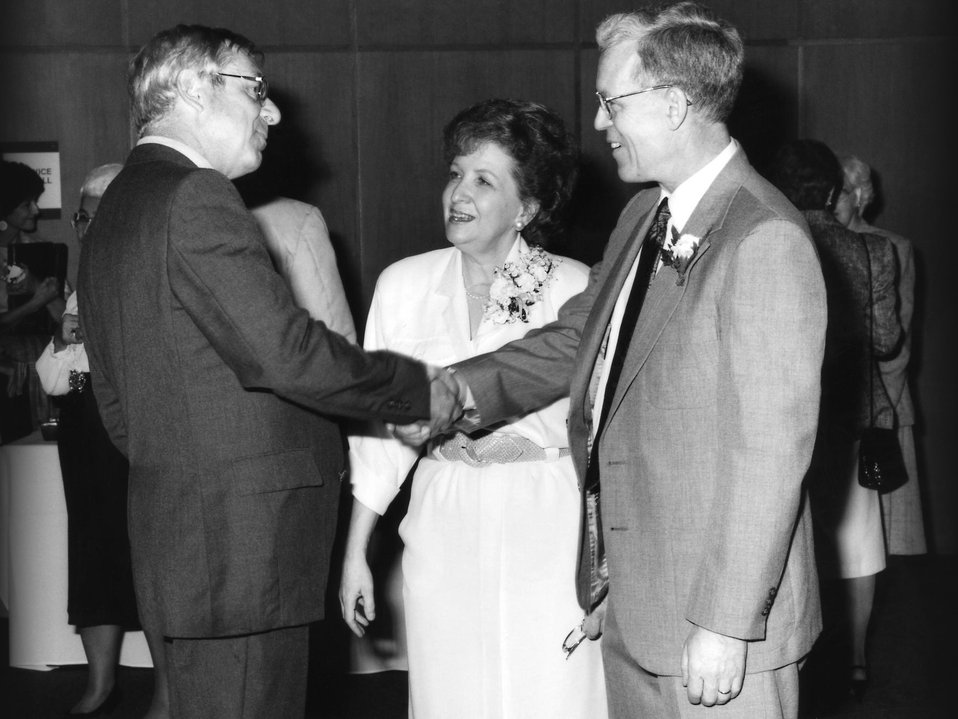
This1989 photograph showed James O. Mason, M.D., M.P.H. (right), shaking hands with Don Berreth (left), former Assistant Secretary for Public Affairs in the Department of Health and Human Services (HHS).